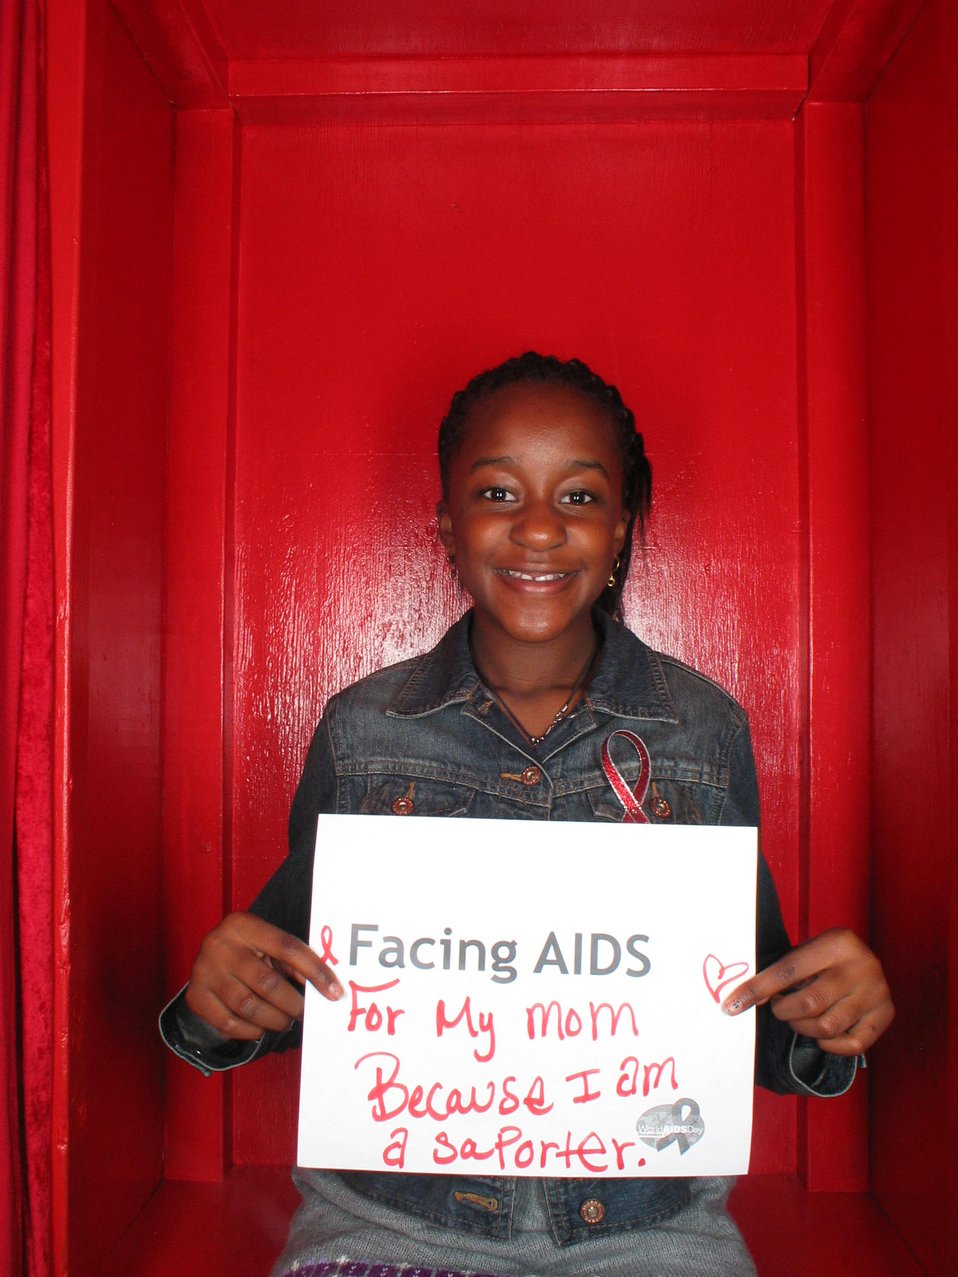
Facing AIDS for my mom because I am a supporter